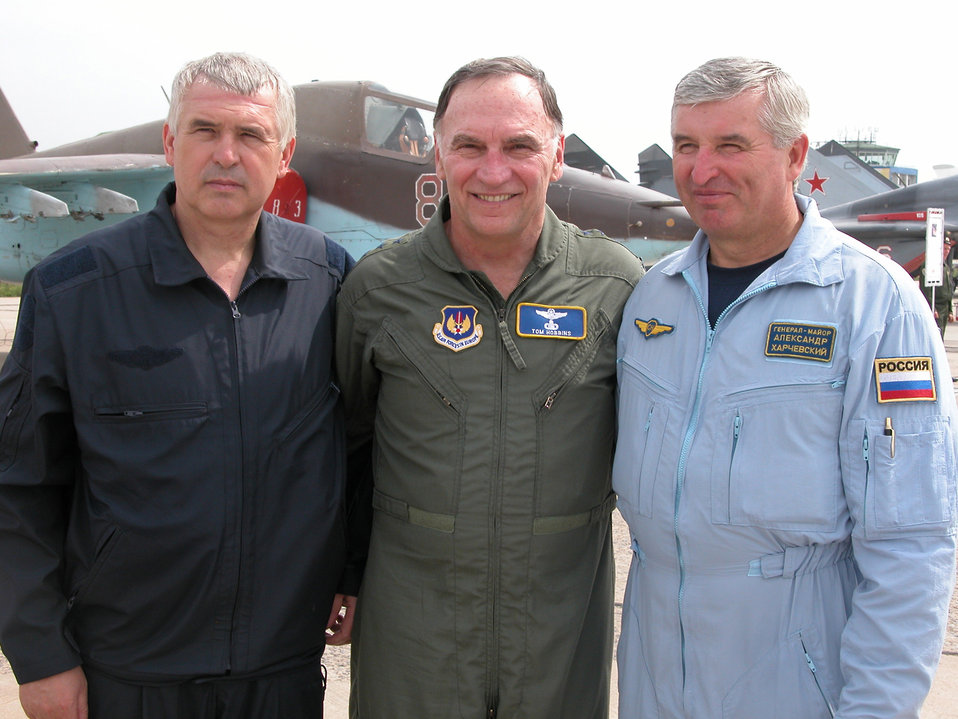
COMUSAFE boosts U.S.-Russian relations with visit

Gen. Tom Hobbins (center), U.S. Air Forces in Europe commander, prepares for his flights with Gen. Col. Aleksandr Zelin (left), deputy commander in chief of the Russian Federation Air Force, and Gen. Maj. Aleksandr Kharchevskiy, chief of the 4th Center for Combat Use and Flight Training, on Aug. 15. General Hobbins, who is in Russia Aug. 14 to 17 to bolster relationships and security cooperation between U.S. and Russian air forces, flew in both the SU-27 Flanker and MiG-29 Fulcrum during his visit to Lipetsk Air Base.